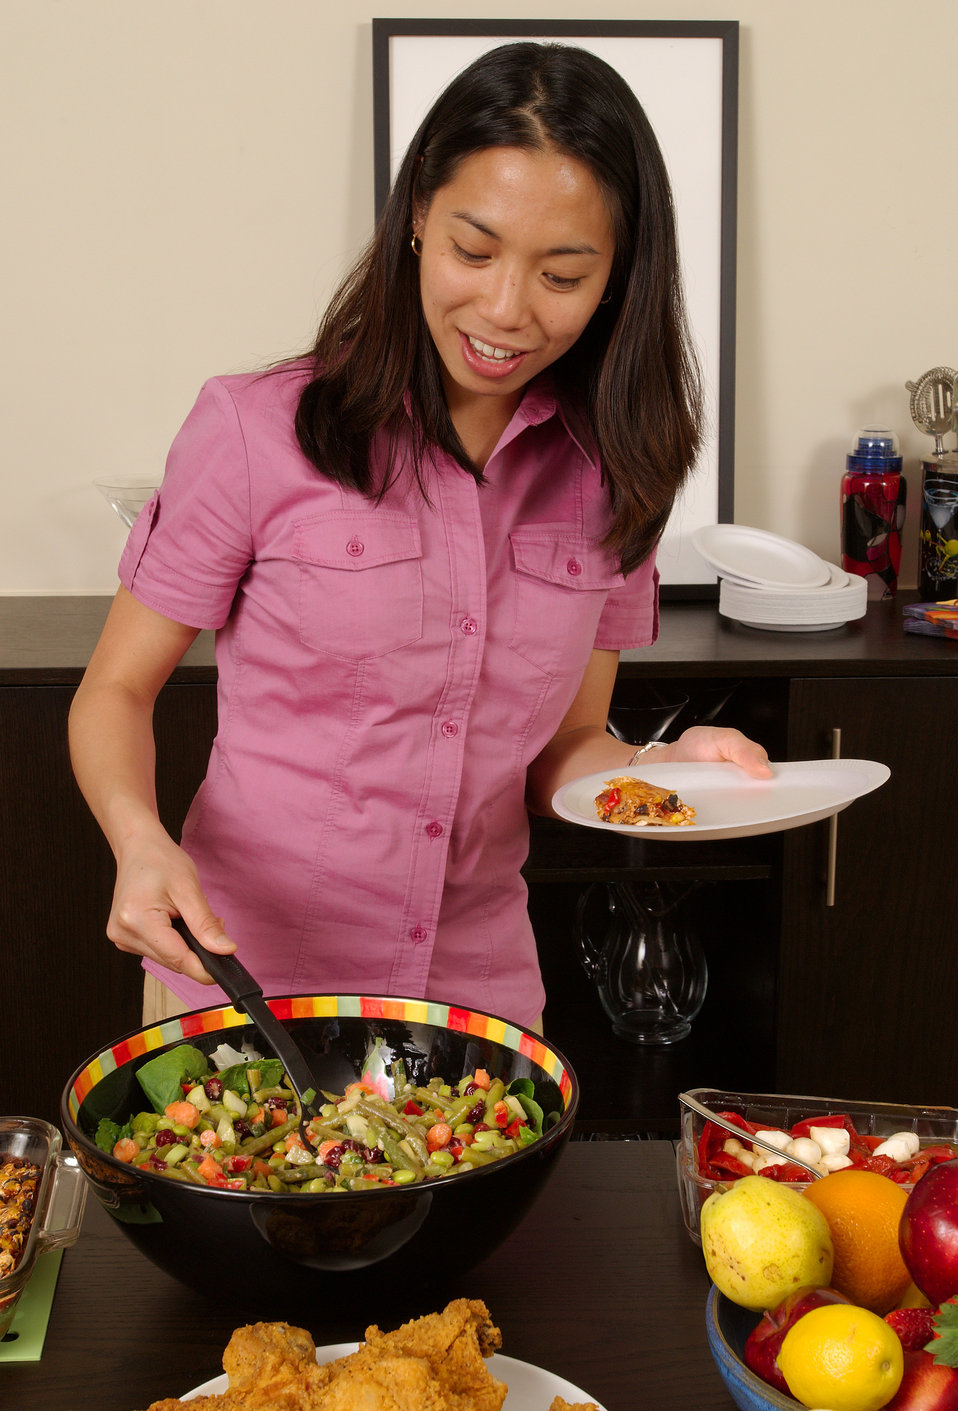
Woman serving food

This image depicts a young woman serving herself from a dining table, atop which was plated a large quantity of foods representing a number of different food groups: grains, fruits, vegetables, milk products, meats/poultry/fish, and nuts/seeds/legumes. Here, she was about to add what appears to be some edamame salad to her plate.